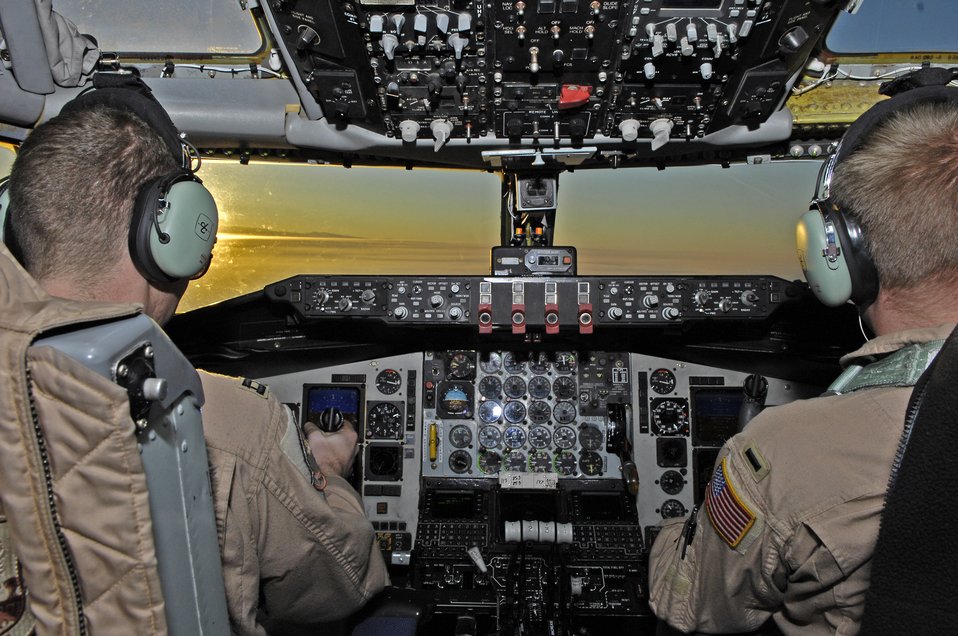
Fill'er up please!

Pilots Capt. Mike Silok and 1st Lt. Justin Tiffany fly over the mountains of Afghanistan as they head back to base after refueling a B-1B Lancer. The 22nd EARS primarily refuels aircraft in and around Afghanistan. Both pilots are deployed with the 22nd Expeditionary Air Refueling Squadron at Manas Air Base, Kyrgyzstan, and are assigned to the 92nd Air Refueling Wing, Fairchild Air Force Base, Wash.,